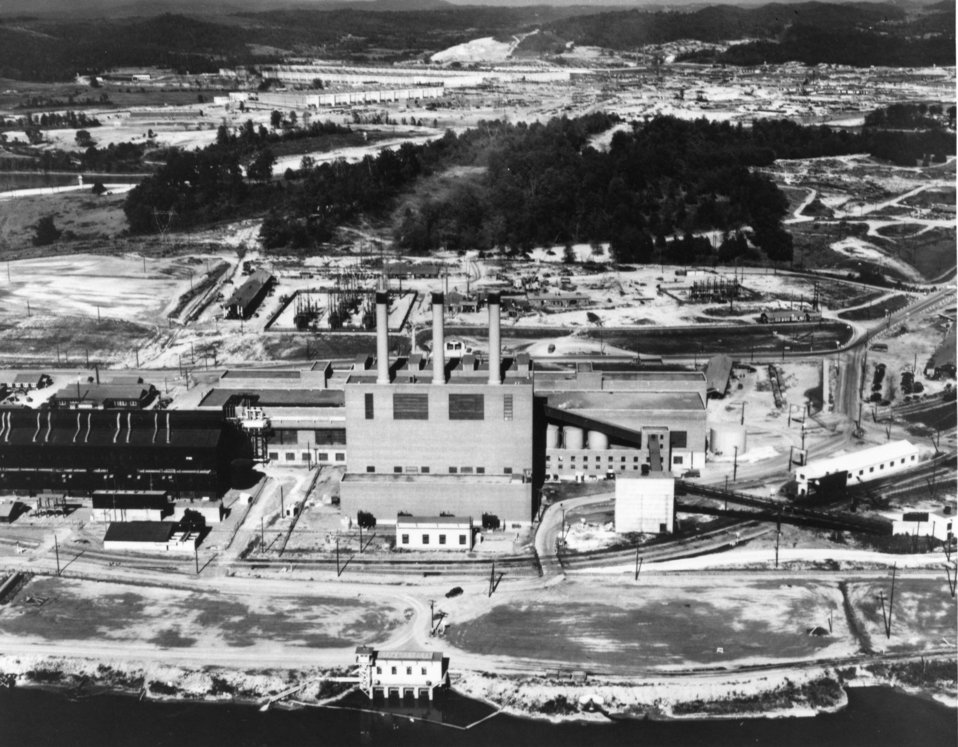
Aerial of Oak Ridge